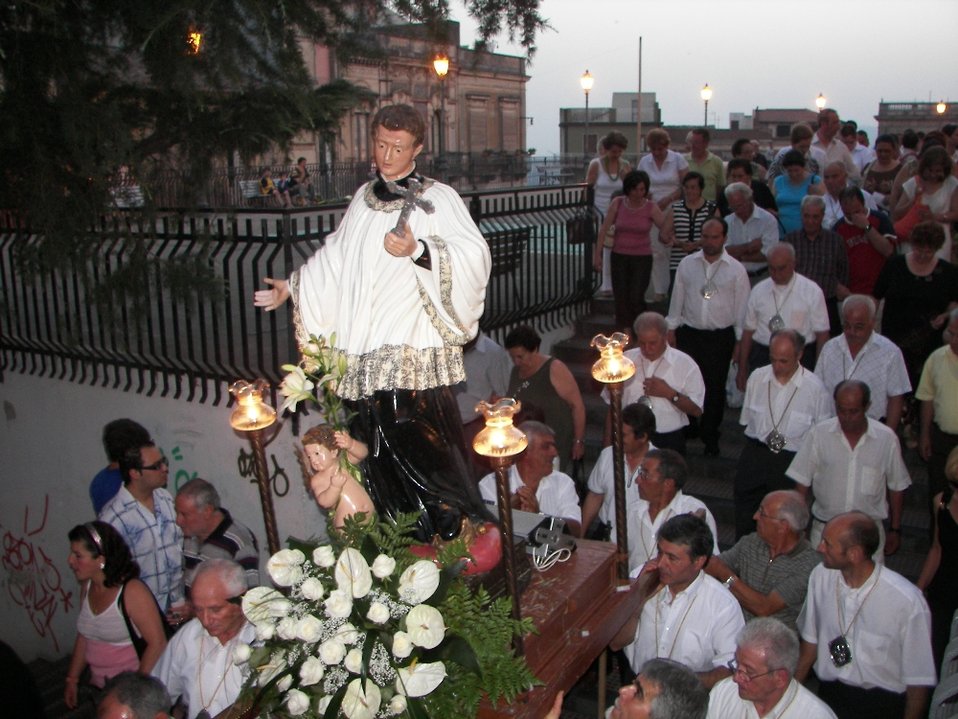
Italiano: Festa di San Luigi a Santa Maria di Licodia